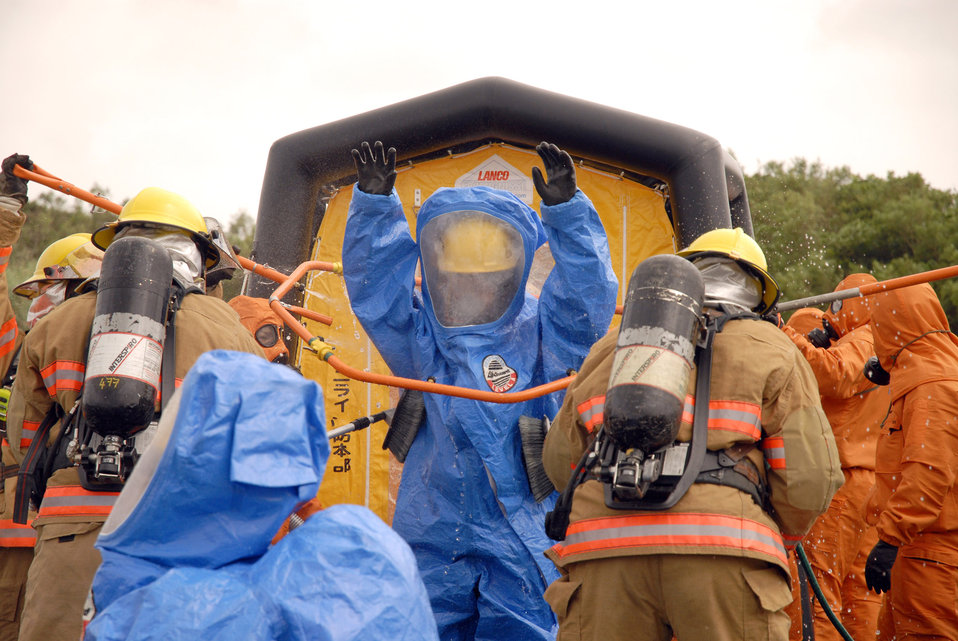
Joint emergency response training

Emergency response officers help Tsuyoshi Taira at a decontamination shower after he participated in joint training at a simulated chemical spill at Kadena Air Base, Japan, on July 14. The training, conducted by firefighters from the 18th Civil Engineer Squadron and the Nirai Fire Department, helps the organizations understand each other's capabilities. The Nirai Fire Department covers Kadena-Town and Yomitan-Village, which surround the base. Mr. Taira is with the 18th CES.